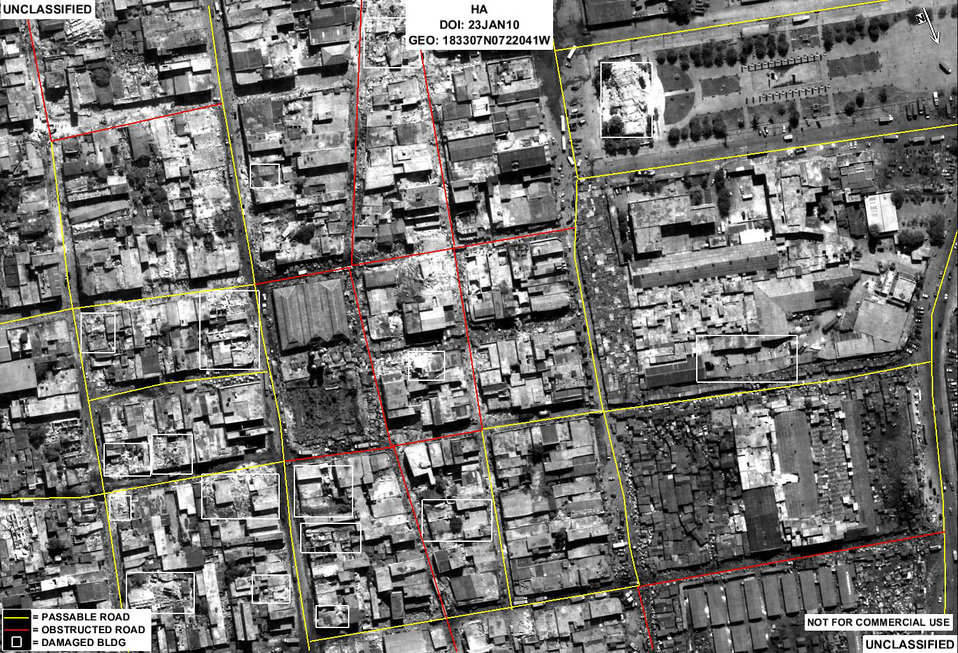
Lackland Airmen aid Haiti recovery

This image from an RQ-4 Global Hawk shows passable and obstructed roads in Haiti. This photo demonstrates the assistance Global Hawk is providing to relief and rescue organizations in Haiti. The image taken by a Global Hawk from Beale Air Force Base, Calif., and analysts from the 480th Intelligence, Surveillance and Reconnaissance Wing's 548th Intelligence, Surveillance and Reconnaissance Group at Beale AFB provided assessments of the image to assist in all aspects of recovery and relief. The 480th ISR Wing is a subordinate unit of the Air Force ISR Agency, which has its headquarters at Lackland Air Force Base, Texas.